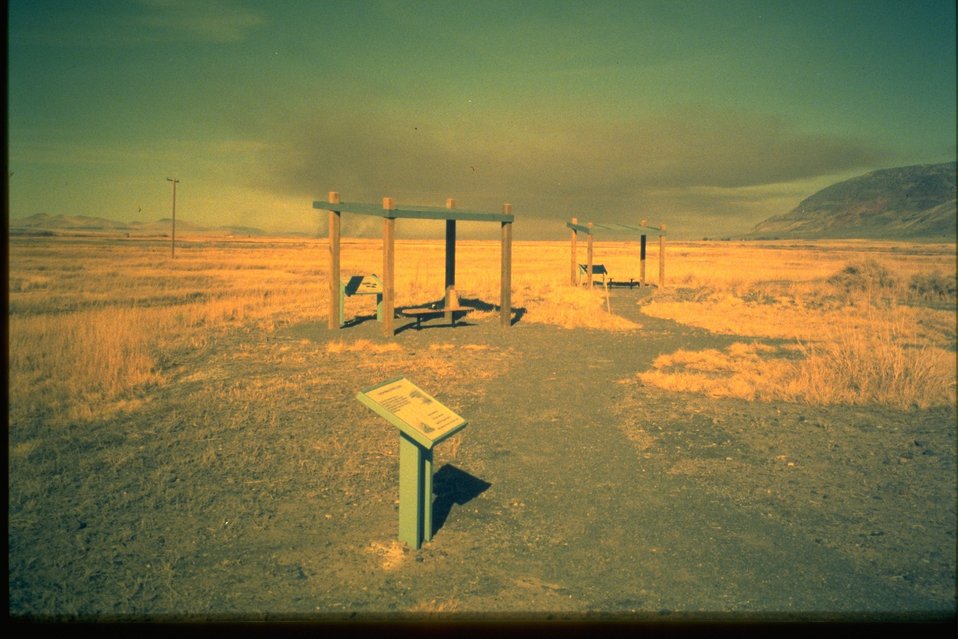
Viewing blinds, interpretive panels, and kiosks at the Warner Wetlands.